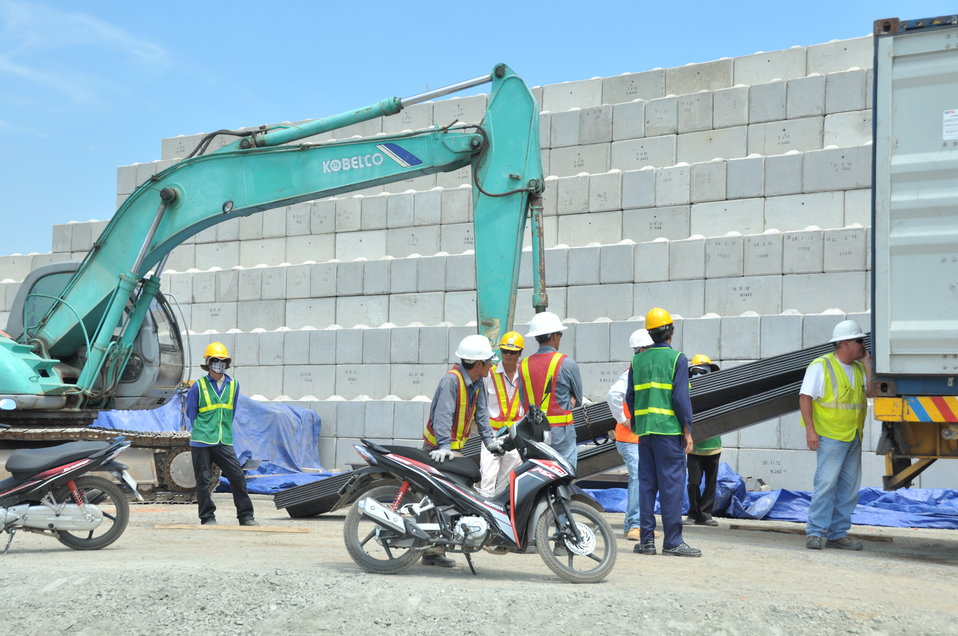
Site construction at the Environmental Remediation of Dioxin Contamination at Danang Airport

Progress at the Danang Airport remediation site
April 23, 2013